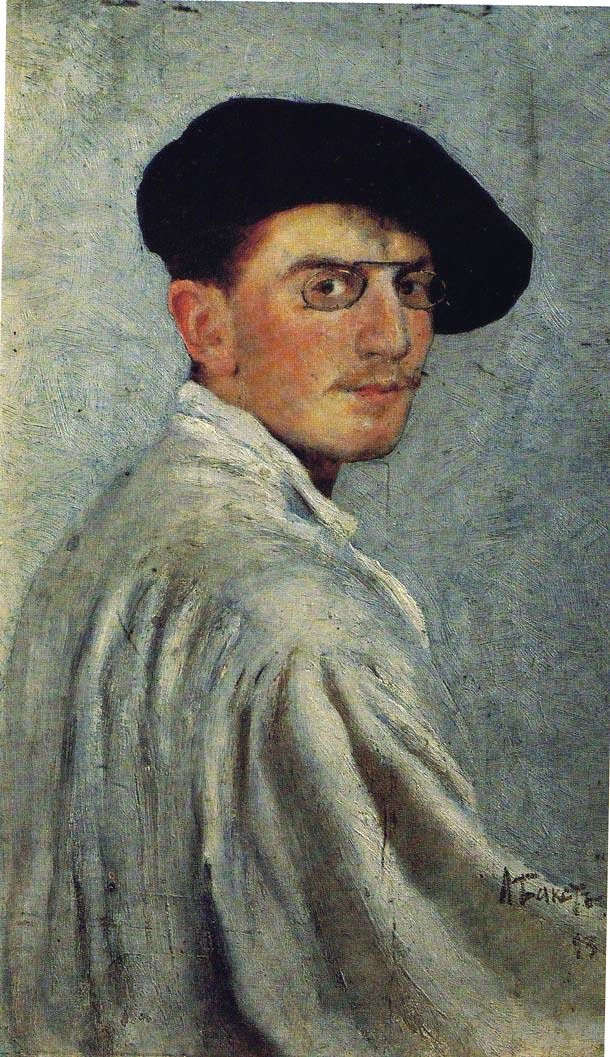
Bakst self